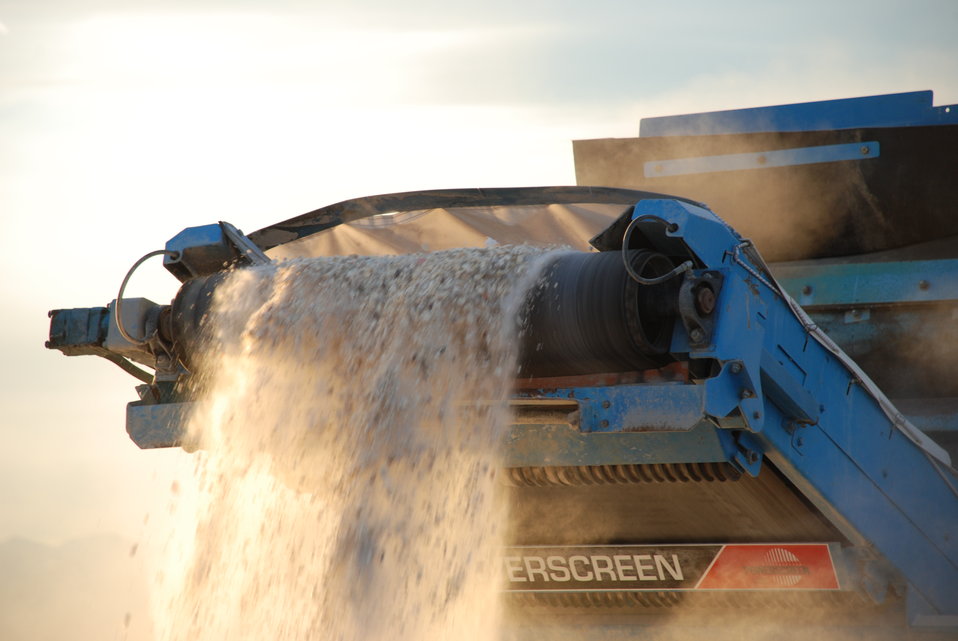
Ivory Crush 2013